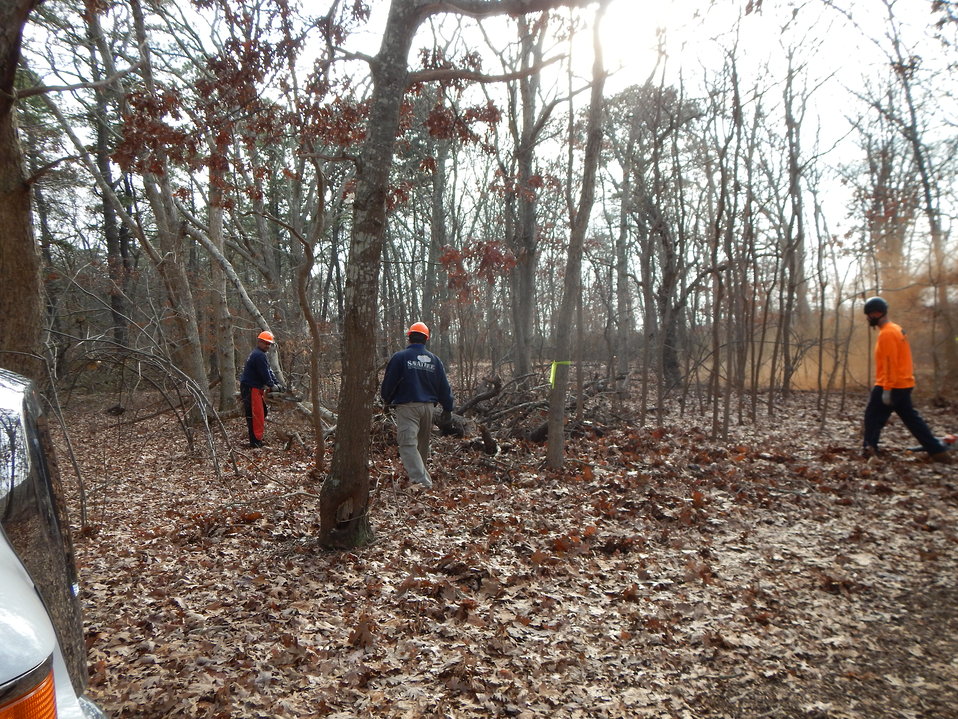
Tree removal at Wertheim National Wildlife Refuge

Clean-up of Hurricane Sandy damage.